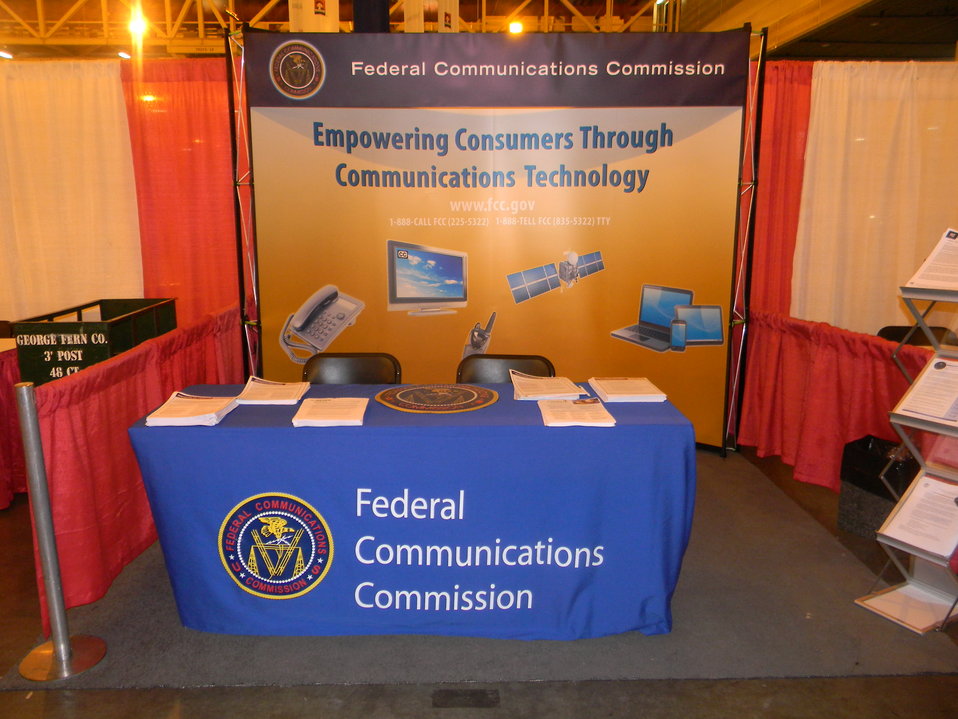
2012 National Urban League Conference

FCC booth at the NUL Conference in New Orleans Louisiana July 25-28, 2012.